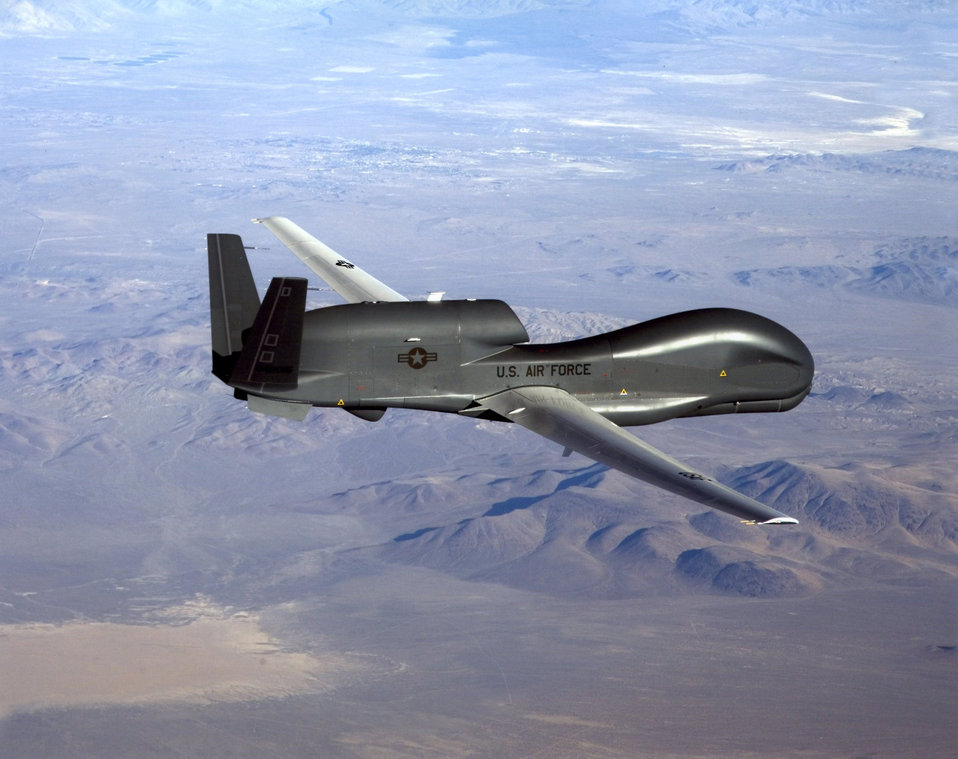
Operations center keeps Global Hawk flying

An RQ-4 Global Hawk soars through the skies to record intelligence, surveillence and reconnaissance data. Because of its large coverage area the Global Hawk has become a useful tool for recording data and sending it to warfighters on the ground.